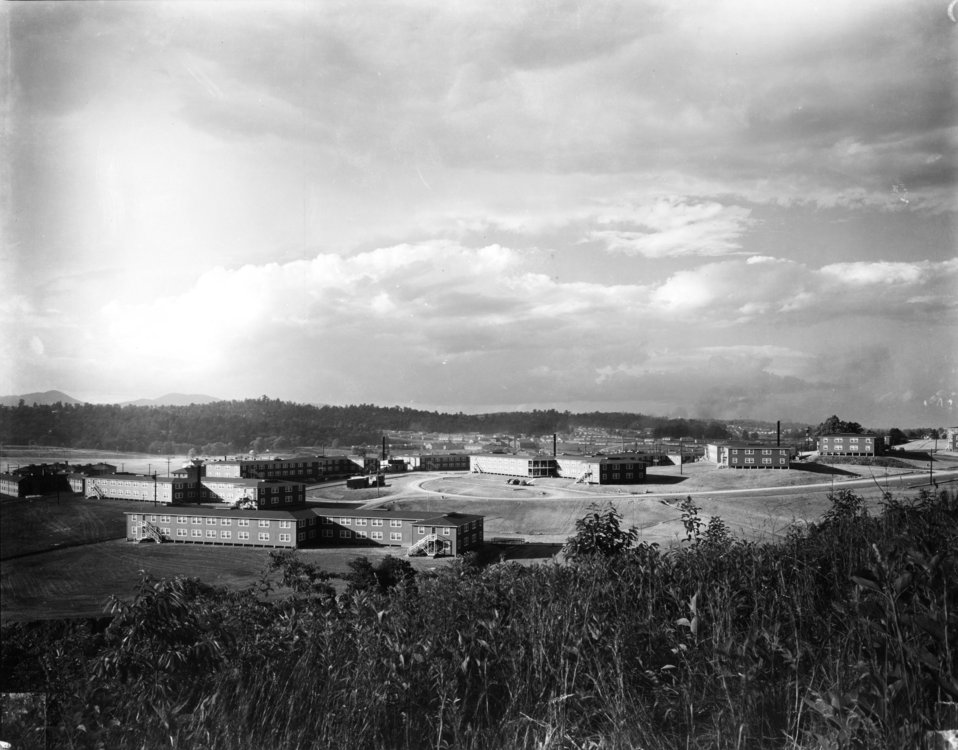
Housing at Oak Ridge